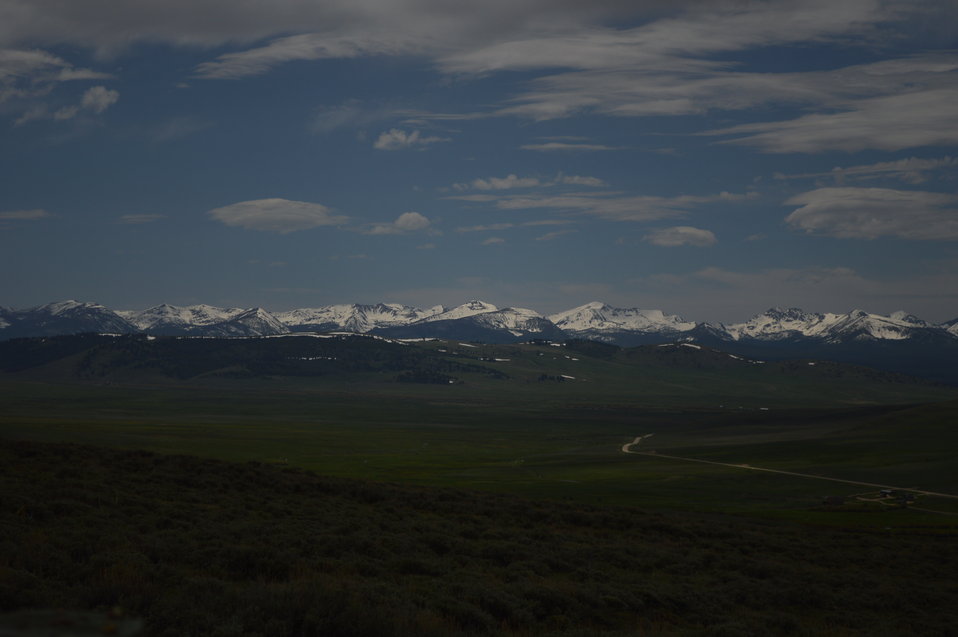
Regional Leadership Visit to Montana 2014